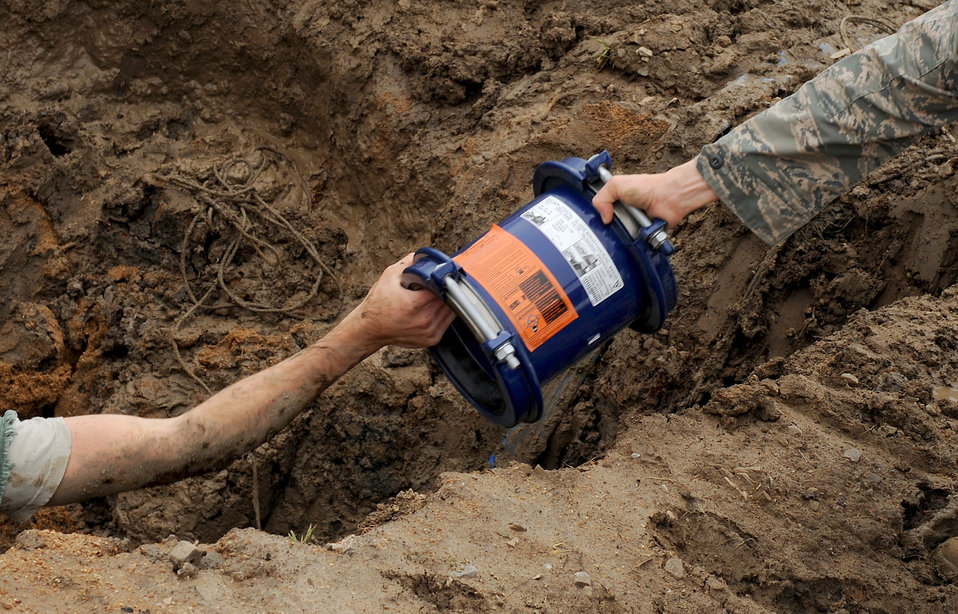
Maintenance specialists

Airmen from the 509th Civil Engineer Squadron hand each other parts to fix a busted water main March 7, 2011, at Whiteman Air Force Base, Mo.